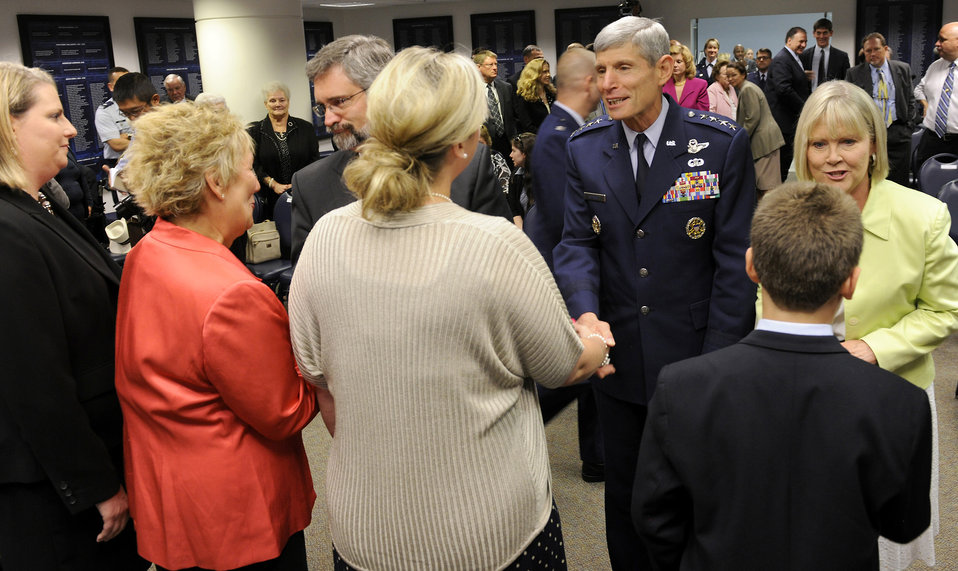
Former U-2 pilot posthumously awarded Silver Star

Air Force Chief of Staff Gen. Norton Schwartz and his wife Suzie congratulate family members of Capt. Francis Gary Powers following his posthumous presentation of the Silver Star on June 15, 2012, in the Pentagon. Powers was shot down over the Soviet Union on May 1, 1960, and received the decoration for the heroism he displayed while held prisoner by the Soviets. He was released in 1962 but subsequently died in a 1977 helicopter crash.